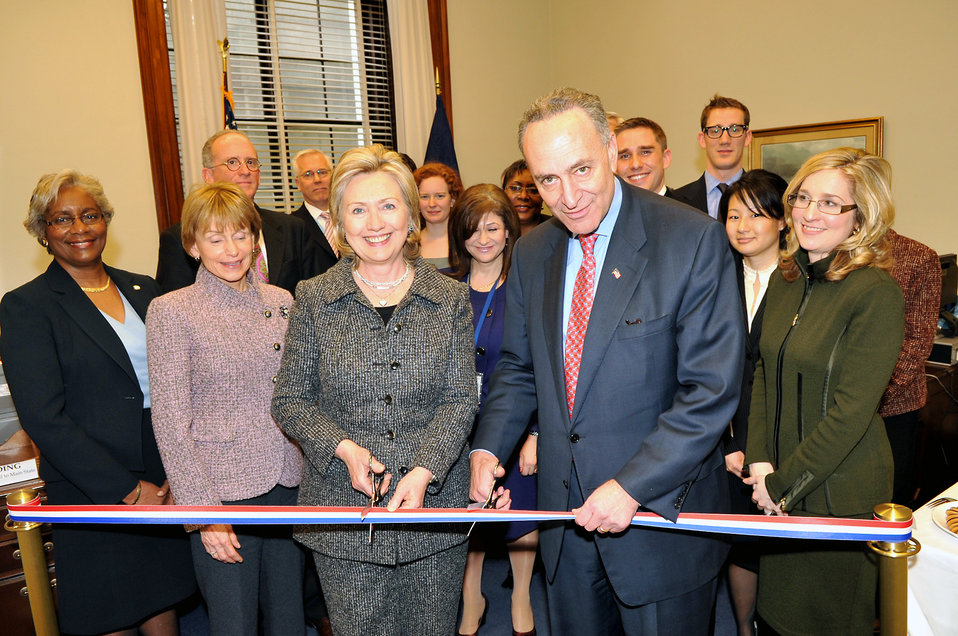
Secretary Clinton Unveils New State Senate Liaison Office

U.S. Secretary of State Hillary Rodham Clinton and U.S. Senator Charles E. Schumer participate in a ribbon cutting ceremony with staff to unveil the U.S. Department of State Senate Liaison Office in Washington, DC February 24, 2010.